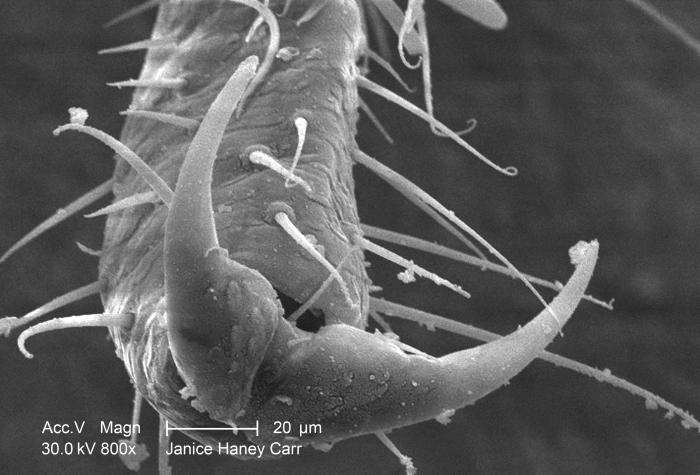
Under a moderate magnification of 800X, this scanning electron micrograph (SEM) revealed some of the ultrastructural morphology found at the distal end of one of the six jointed legs of a termite, which had been discovered in the suburbs of Atlanta, Georgia.